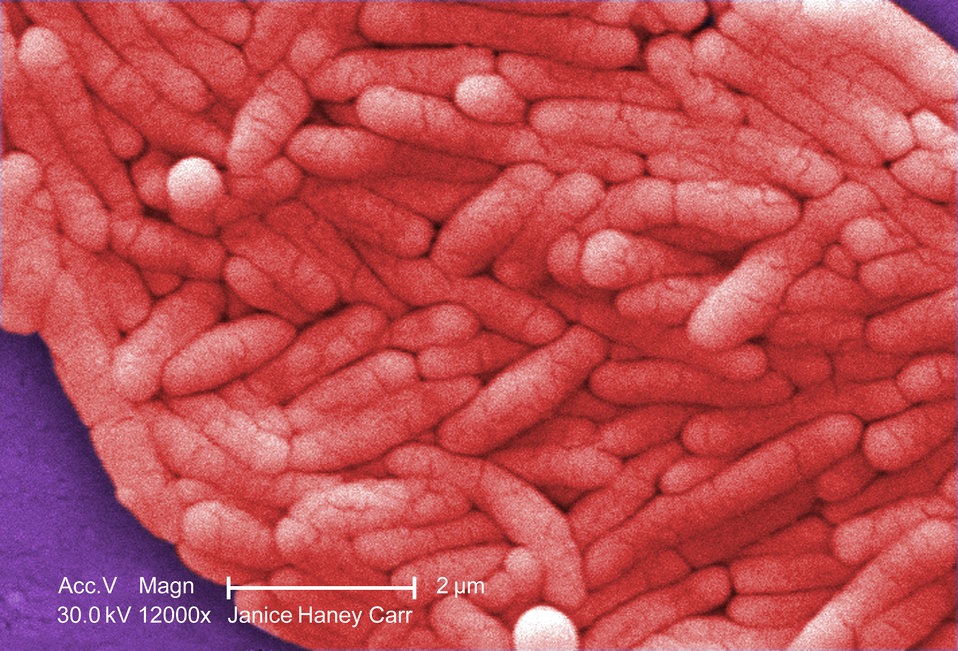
Under a very high magnification of 12000X, this colorized scanning electron micrograph (SEM) revealed the presence of a large grouping of Gram-negative Salmonella typhimurium bacteria that had been isolated from a pure culture.